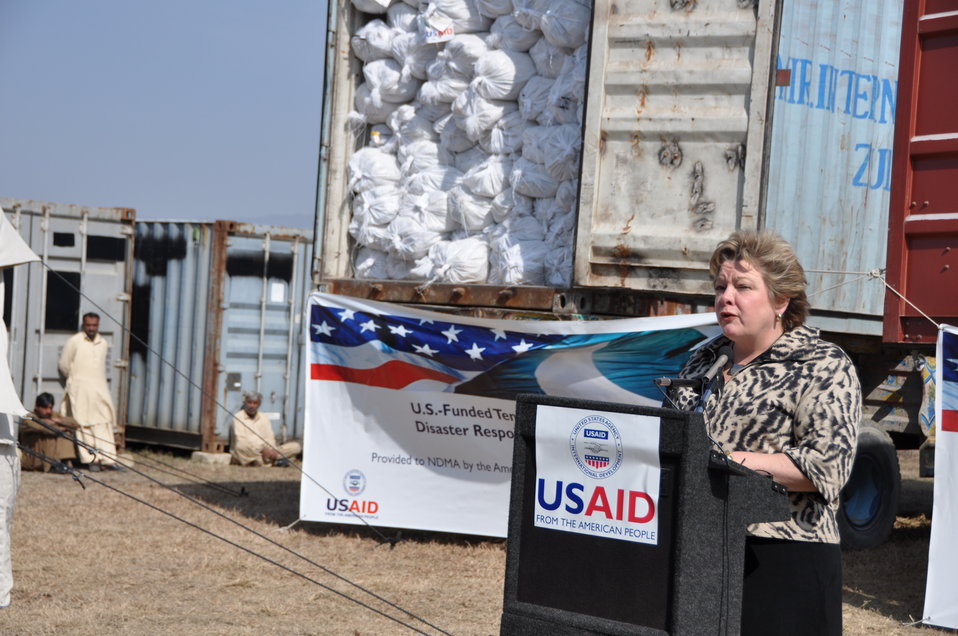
U.S. Agency for International Development (USAID) Deputy Director Karen Freeman speaks at the handover of U.S.-funded tents to support Pakistan’s disaster preparedness.

For more information on the U.S. assistance related to the 2010 and 2011, please see

www.youtube.com/user/USAIDPakistan?feature=guide#p/u/4/-K...
www.youtube.com/user/USAIDPakistan?feature=guide#p/u/5/JG...
www.youtube.com/user/USAIDPakistan?feature=guide#p/u/7/nh...
www.youtube.com/user/USAIDPakistan?feature=guide#p/u/8/Jr...
www.youtube.com/user/USAIDPakistan?feature=guide#p/u/9/gZ...
www.youtube.com/user/USAIDPakistan?feature=guide#p/u/12/q...
www.youtube.com/user/USAIDPakistan?feature=guide#p/u/20/v...

Or Visit USAID
pakistan.usaid.gov

Check our videos and photos on YouTube and Flickr:
www.youtube.com/user/USAIDPakistan
www.flickr.com/photos/usaid pakistan